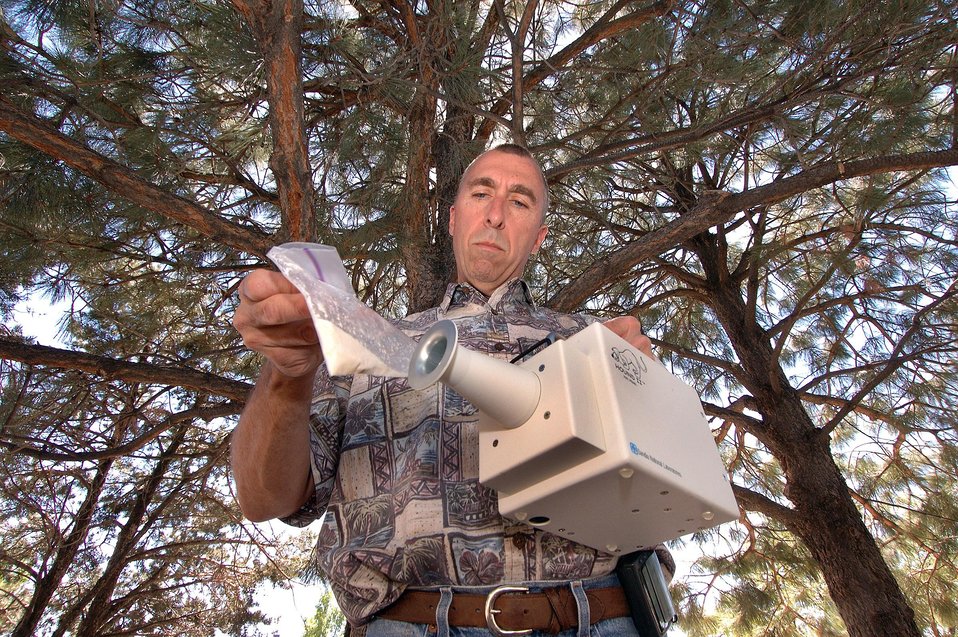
DAVE HANNUM, TEXAS CONTRABAND DETECTION DEPT. DEMOSTRATES THE USE OF SANDIA DEVELOPED HOUND TECHNOLOGY IN DETECTING NARCOTICS.

THE HAND HELD HOUND SYSTEM, ORIGINALLY DEVELOPED AT SANDIA FOR EXPLOSIVES DETECTION IS BEING USED BY SOUTH TEXAS SPECIALIZED CRIMES AND NARCOTICS TASK FORCE TO CATCH DRUG SMUGGLERS. THE HOUND SYSTEMS CAN DETECT NARCOTICS IN NANOGRAM CONCENTRATIONS, INCLUDING DRUG USERS, SUCH AS DOOR HANDLES AND STEERING WHEELS.